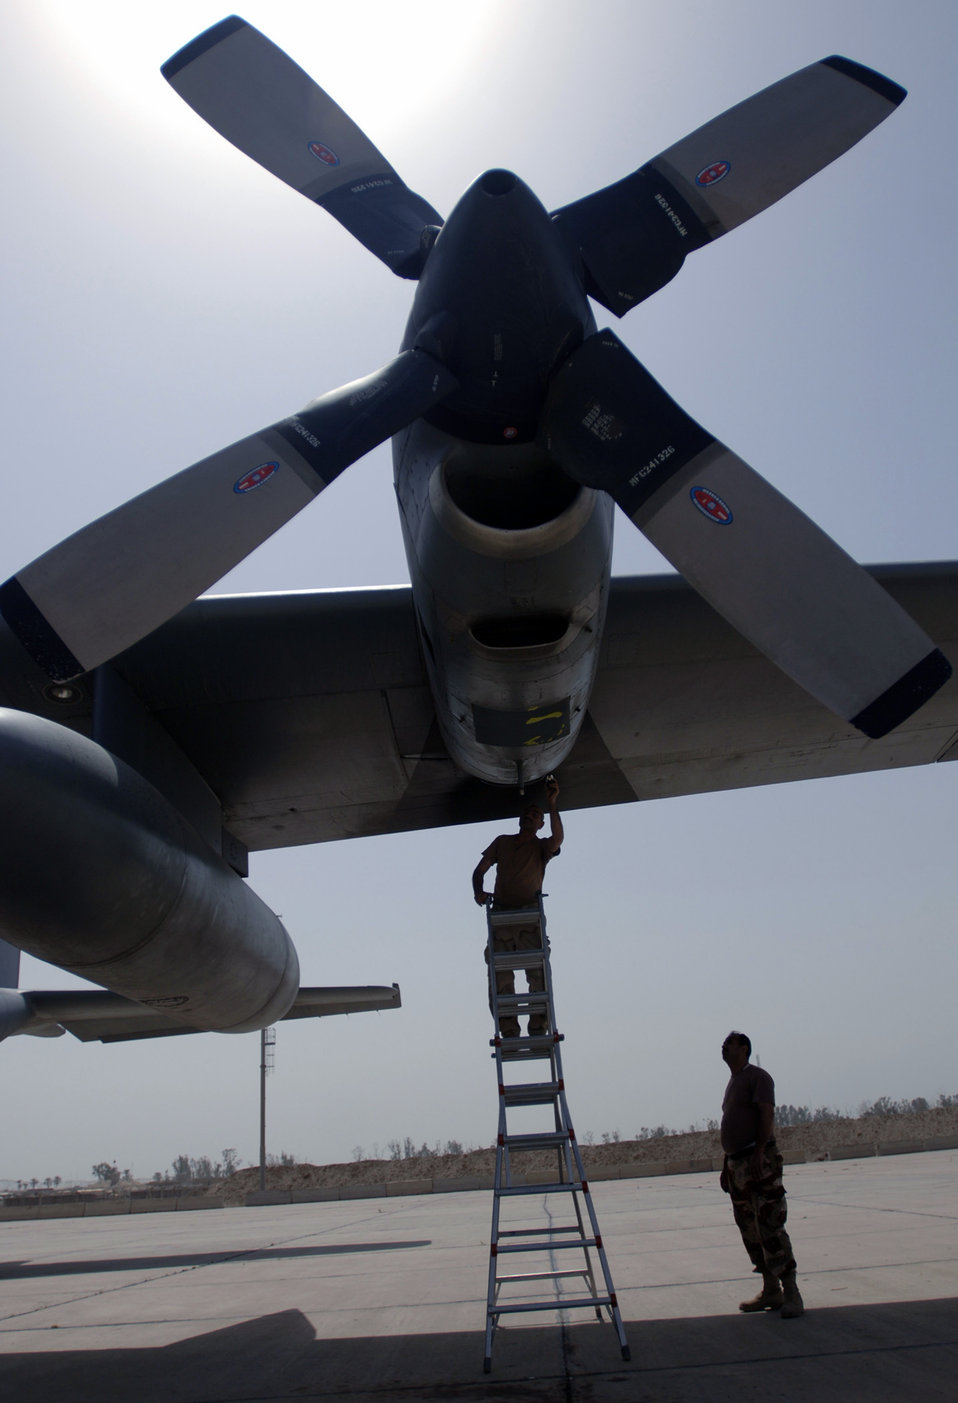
Airmen assist Iraqi Air Force reconstitution

Iraqi Airmen repair an engine part on an Iraqi Air Force C-130 Hercules at New Al Muthana Air Base, Baghdad, Iraq. The 370th Air Expeditionary Advisory Squadron on base provides guidance and mentoring in an effort to help restart the IAF.